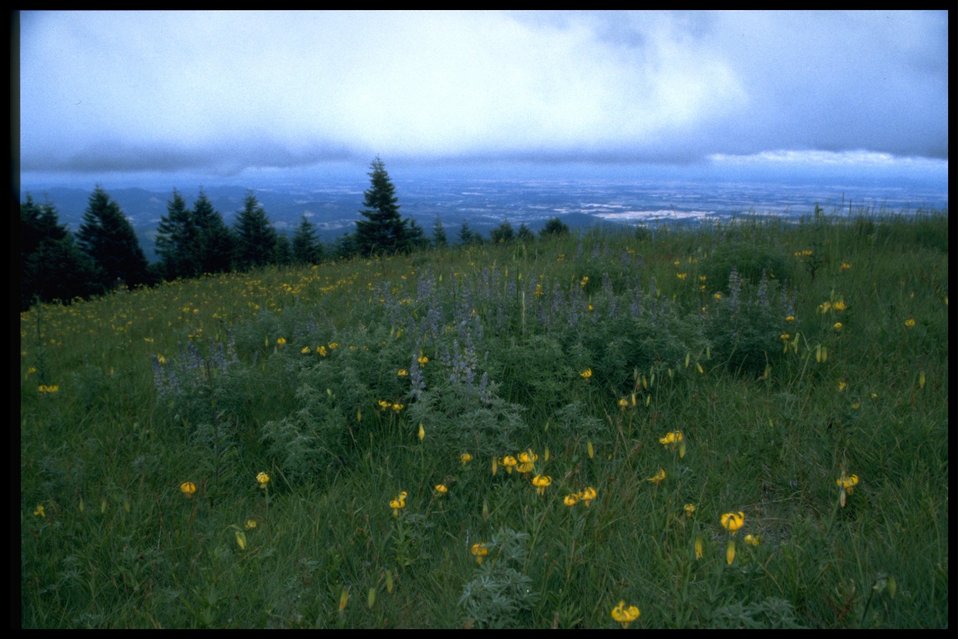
Wide shot of Tiger Lilys, Lilium columbianum.